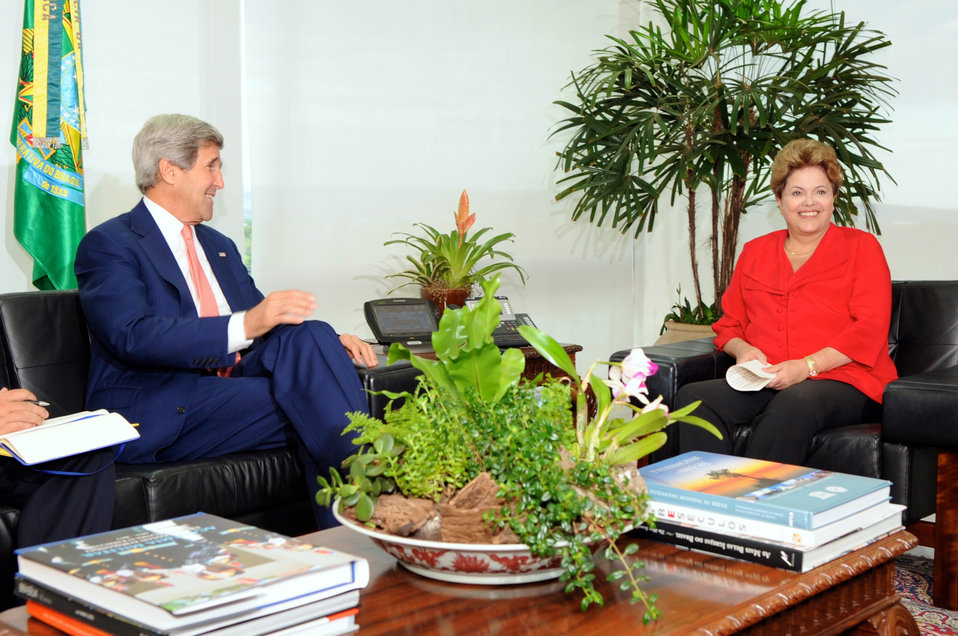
Secretary Kerry Meets With Brazilian President Rousseff

U.S. Secretary of State John Kerry sits with President Dilma Rousseff of Brazil before a bilateral discussion in Brasilia, Brazil, on August 13, 2013.